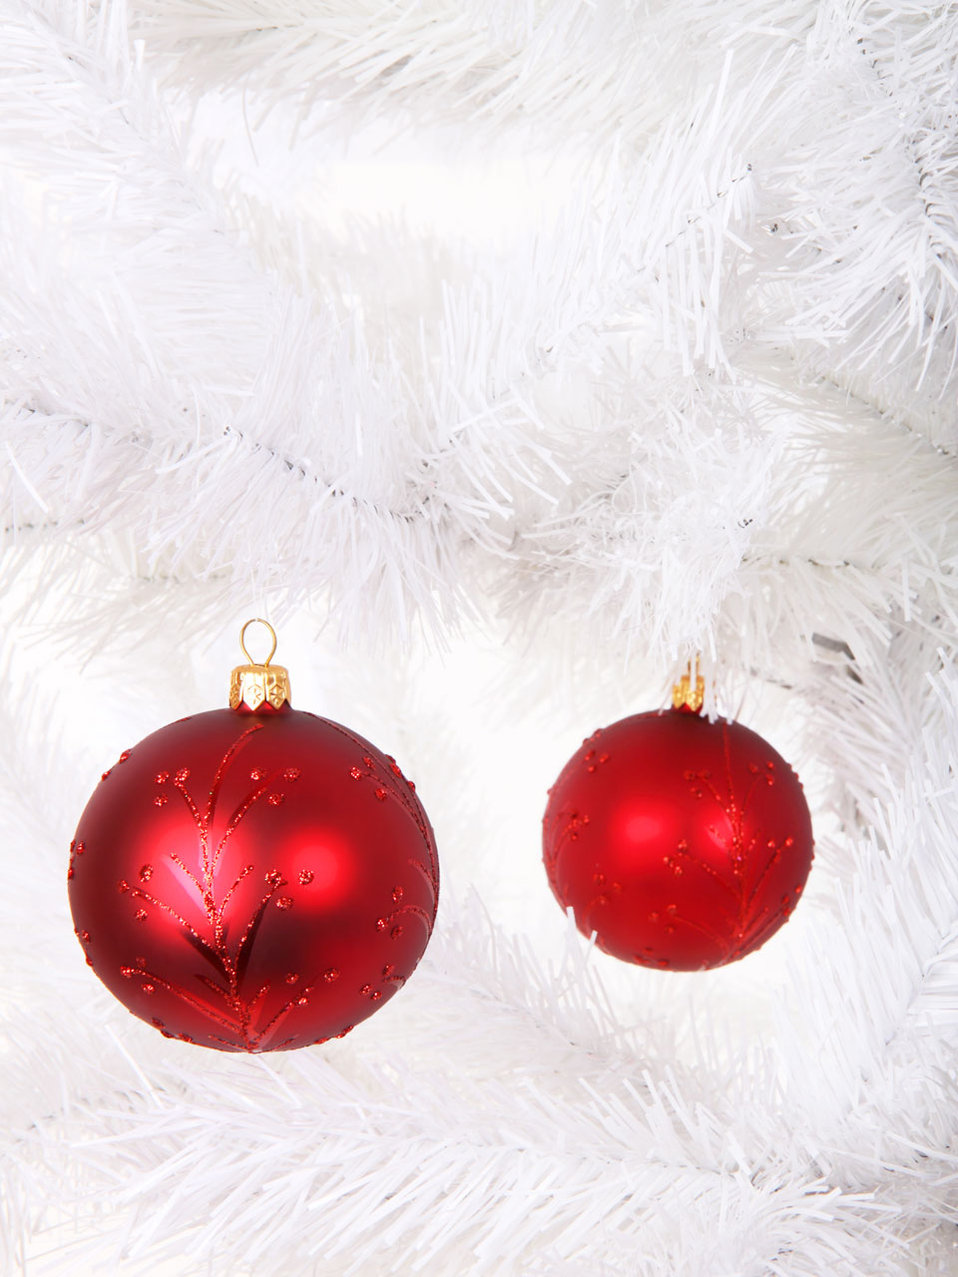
Red christmas balls on tree

Red christmas baubles on white tree - portrait picture.